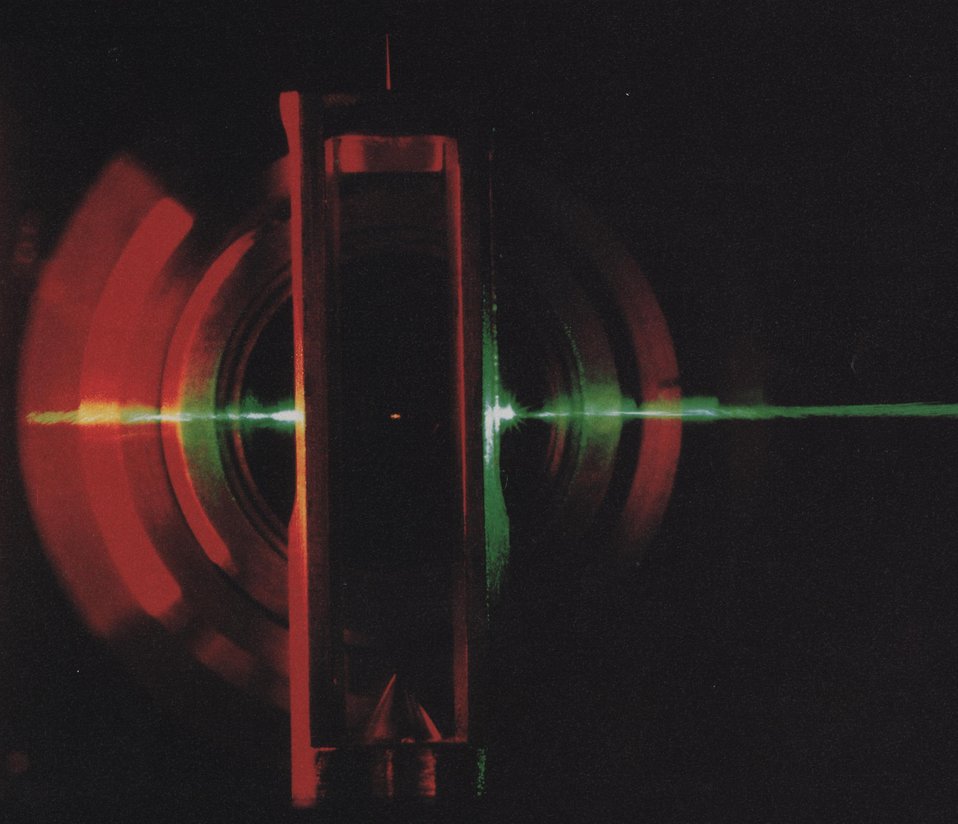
Application of flow cytometry to DNA sequencing. The small yellow spot in the center of this multiple-exposure photograph shows the fluorescence from approximately 1000 molecules of the laser dye -- rhodamine 6G. The apparatus shown is a modified flow cyclometer with the green argon laser beam traversing from left to right.